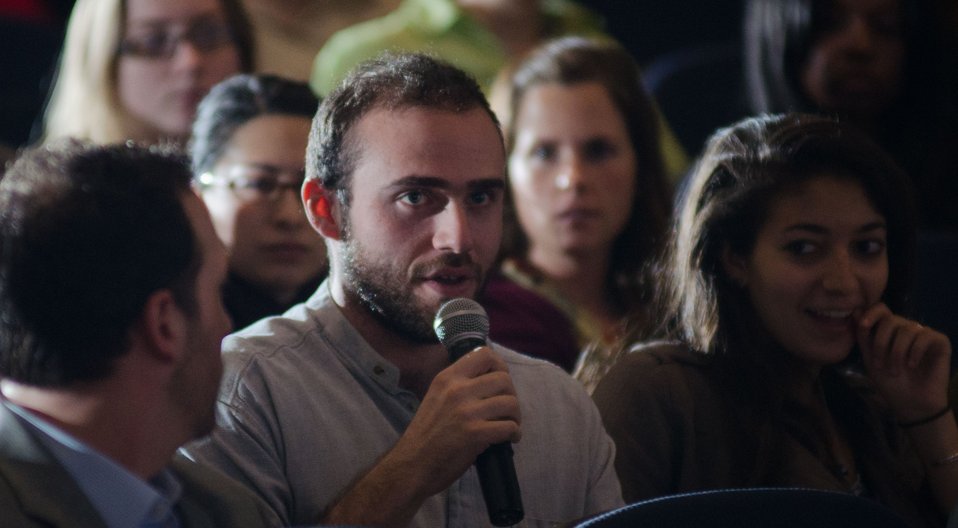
Jessie Shaffer GWU Sophomore and beginner local campus community farmer and Michigan farmer Jessie Shaffer presents a question to the panelists (left to right) National Sustainable Agriculture Coalition Executive Director Susan Prolman, Food Research and Action Center President Jim Weill, Michael Fields Agricultural Institute Public Policy Program Director Margaret Krome, Environmental Working Group President and Co-Founder Ken Cook, Agriculture Deputy Secretary Kathleen Merrigan and Former Agriculture Secretary and moderator Dan Glickman at the “Shaping the Farm Bill for a Sustainable Future” Forum in the Jack Morton Auditorium, at the Trachtenberg School of Public Policy and Public Administration, on the George Washington University campus in Washington, D.C., on Thursday, March 1, 2012.